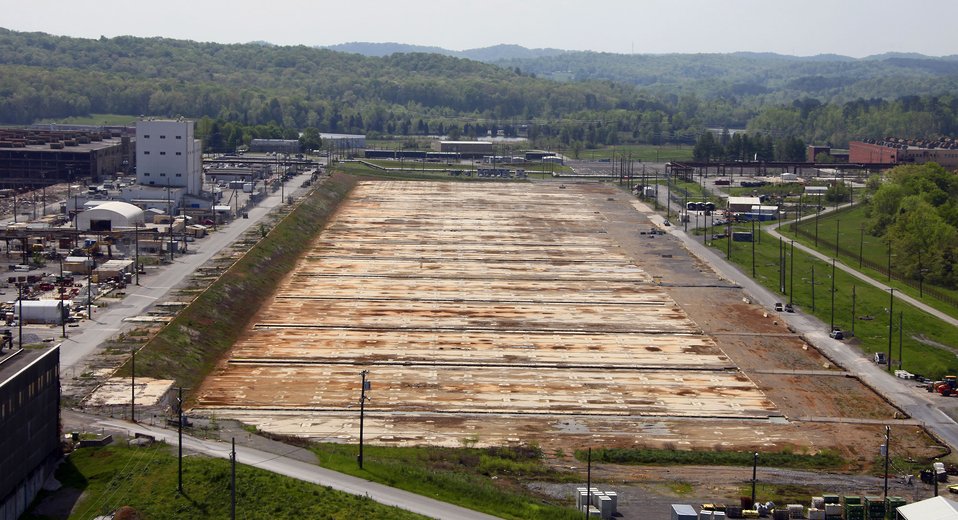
Demolition Progress at Oak Ridge